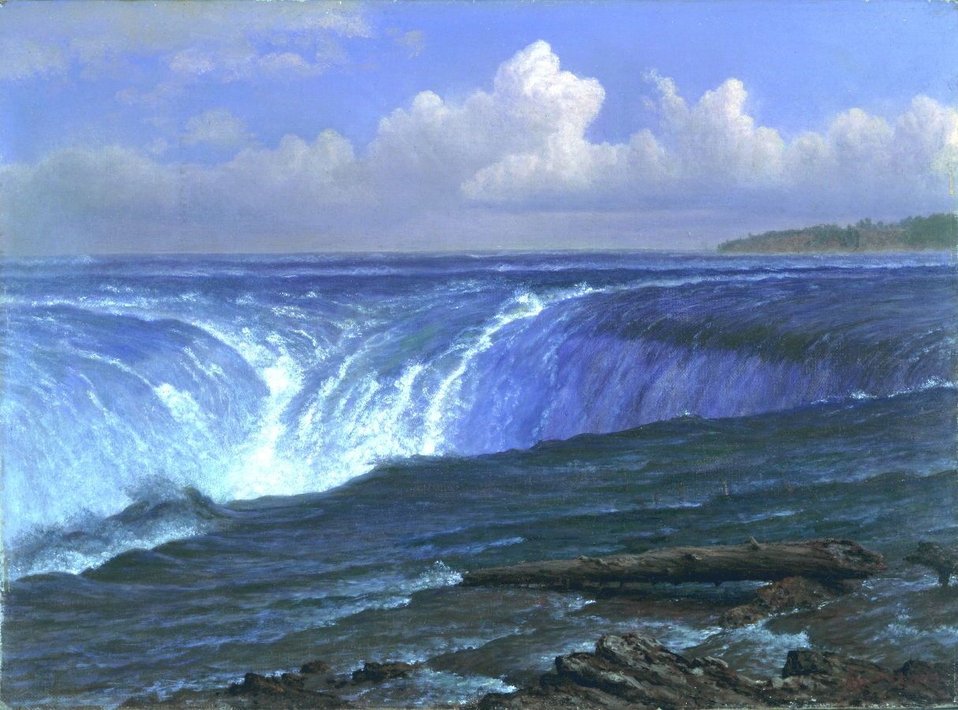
Albert Bierstadt - Niagara Falls